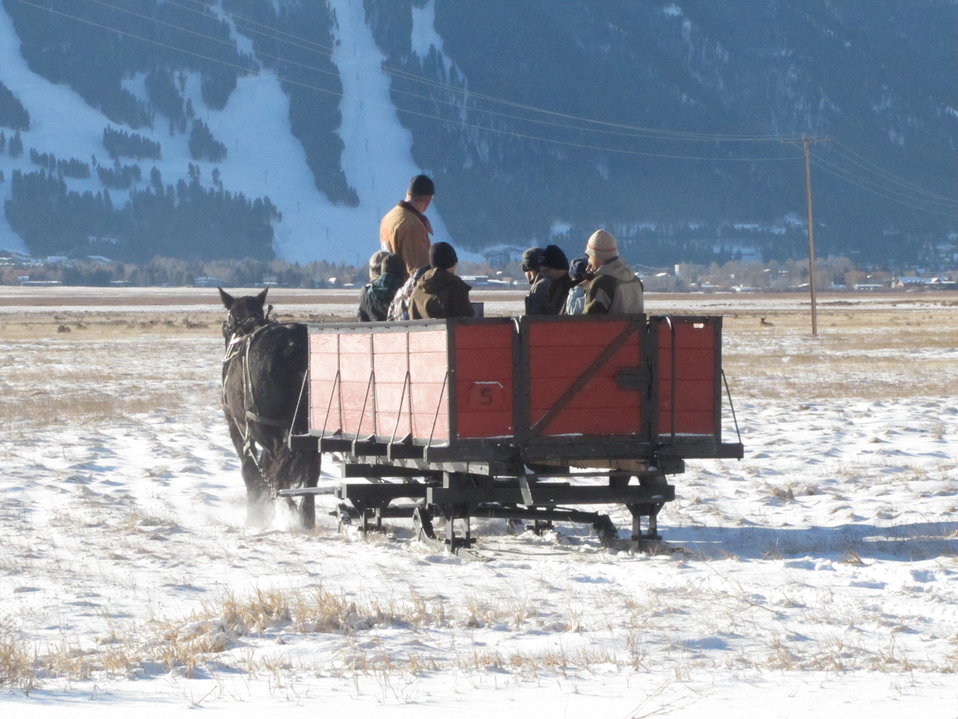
Nearing a Herd

A driver leads a team of horses towards a group of elk. Along the way, the sleigh driver talks about the purpose of the national wildlife refuge.